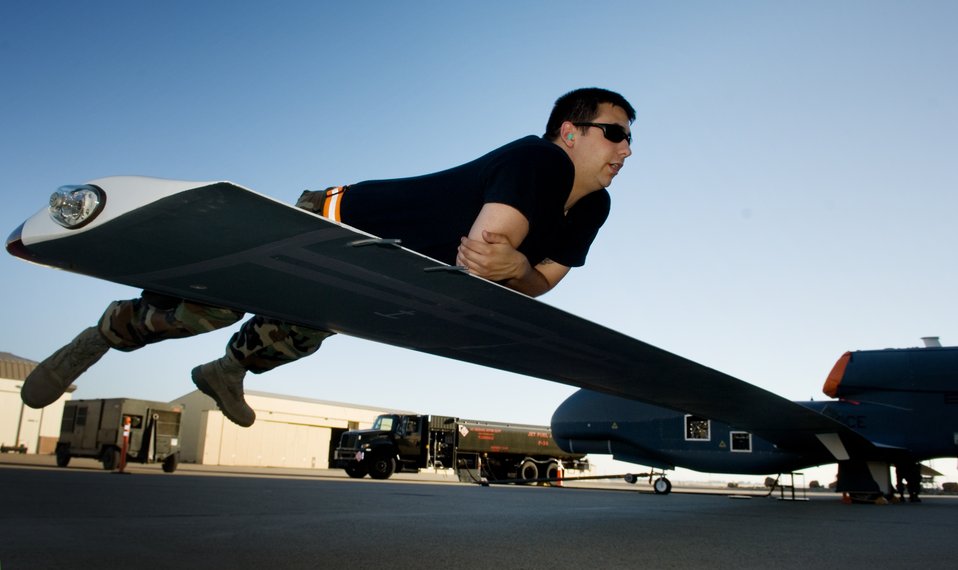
I'm not resting, I'm working...

Senior Airman Jacob Hush serves as the counterbalance as fuel is pumped into a RQ-4 Global Hawk June 16 at Beale Air Force Base, Calif.